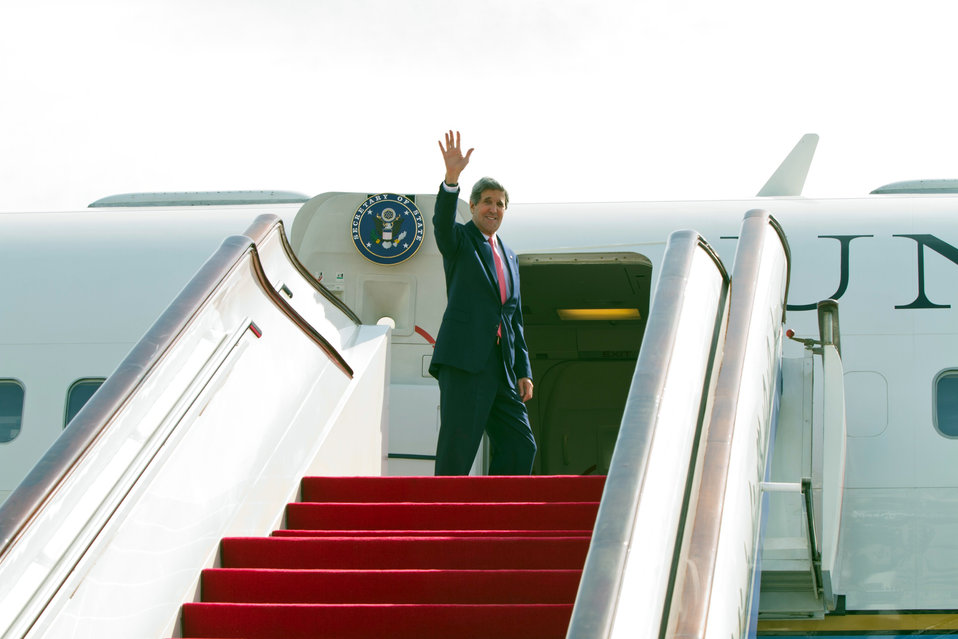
Secretary Kerry Waves Goodbye

U.S. Secretary of State John Kerry waves goodbye before departing Beijing, China, en route to Tokyo, Japan, on April 14, 2013.